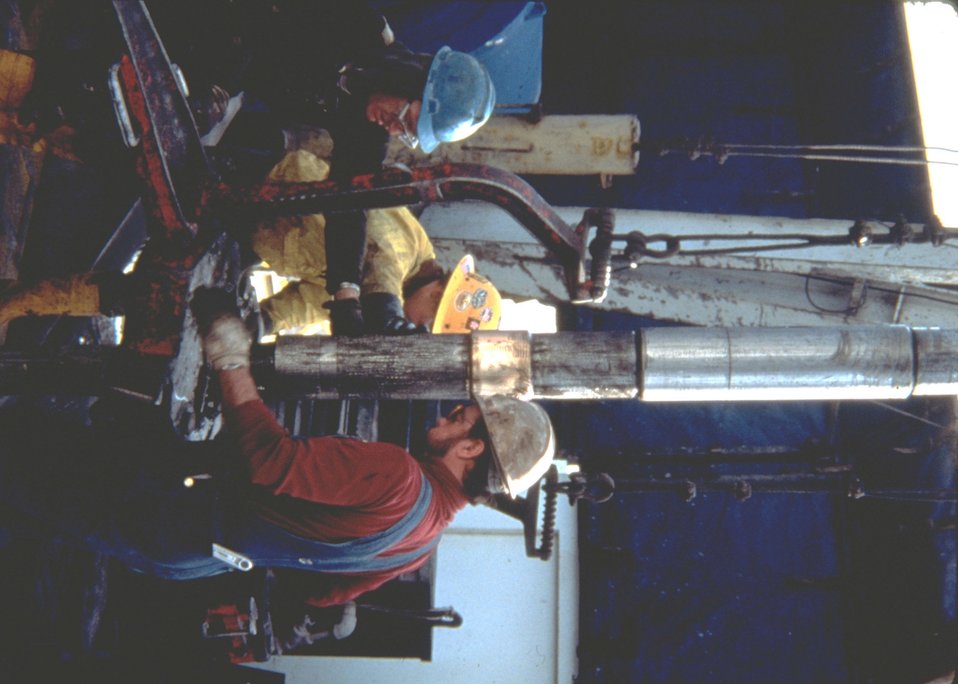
Deep well rig.